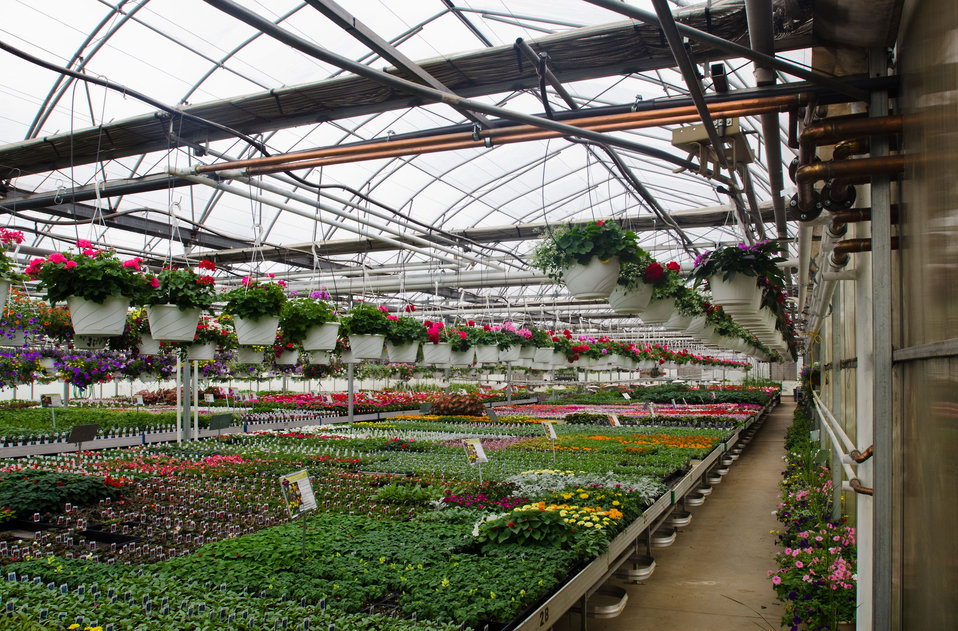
The Good Harvest Farm on April 19, 2011 in Strasburg, PA, completed a Rural Energy for America Program (REAP) grant supported renovations six months ago that replaced an 80-year old structure with a new 4,000 sq. ft. facility that features energy efficient glass roof with curtains that block or trap heat, radiant heaters in or above the floor, and the replacement of an oil-fired hot-air furnaces with propane fueled boilers that supply fin-tube and cement embedded tube elements with hot water. With current fuel prices, there is a projected 2011 energy cost savings of more than $20,000; a 40% reduction in energy costs – exceeding projected savings. Plant health and quality has improved and been more consistent because the temperature and humidity is computer controlled and distributed evenly throughout the facility. Utilizing sensors and a roof mounted weather station the system can maintain four different climate zones 24-hours a day. Two 1,000,000 BTU propane fueled boilers heat the water to 190 degrees for the 8,000 feet of fin-tube heating elements were used where the original foundation, and the 8,000 feet of tubing that was embedded in a new cement foundation. After traveling through the energy efficient system, water only looses 20 degrees. When temperatures become to hot, motorized roof vents open to allow rising heat to escape; a 98% energy savings from massive fans that previously forced air out. Both systems create a microclimate in and round the plant trays in the growing and sales room. Representing Good Harvest Farm Chris Powell says, “You don’t need to have a lot of land to have a lot of green houses. There are places in cities where vegetables are grow on store roof tops and selling them below in the same structure.”